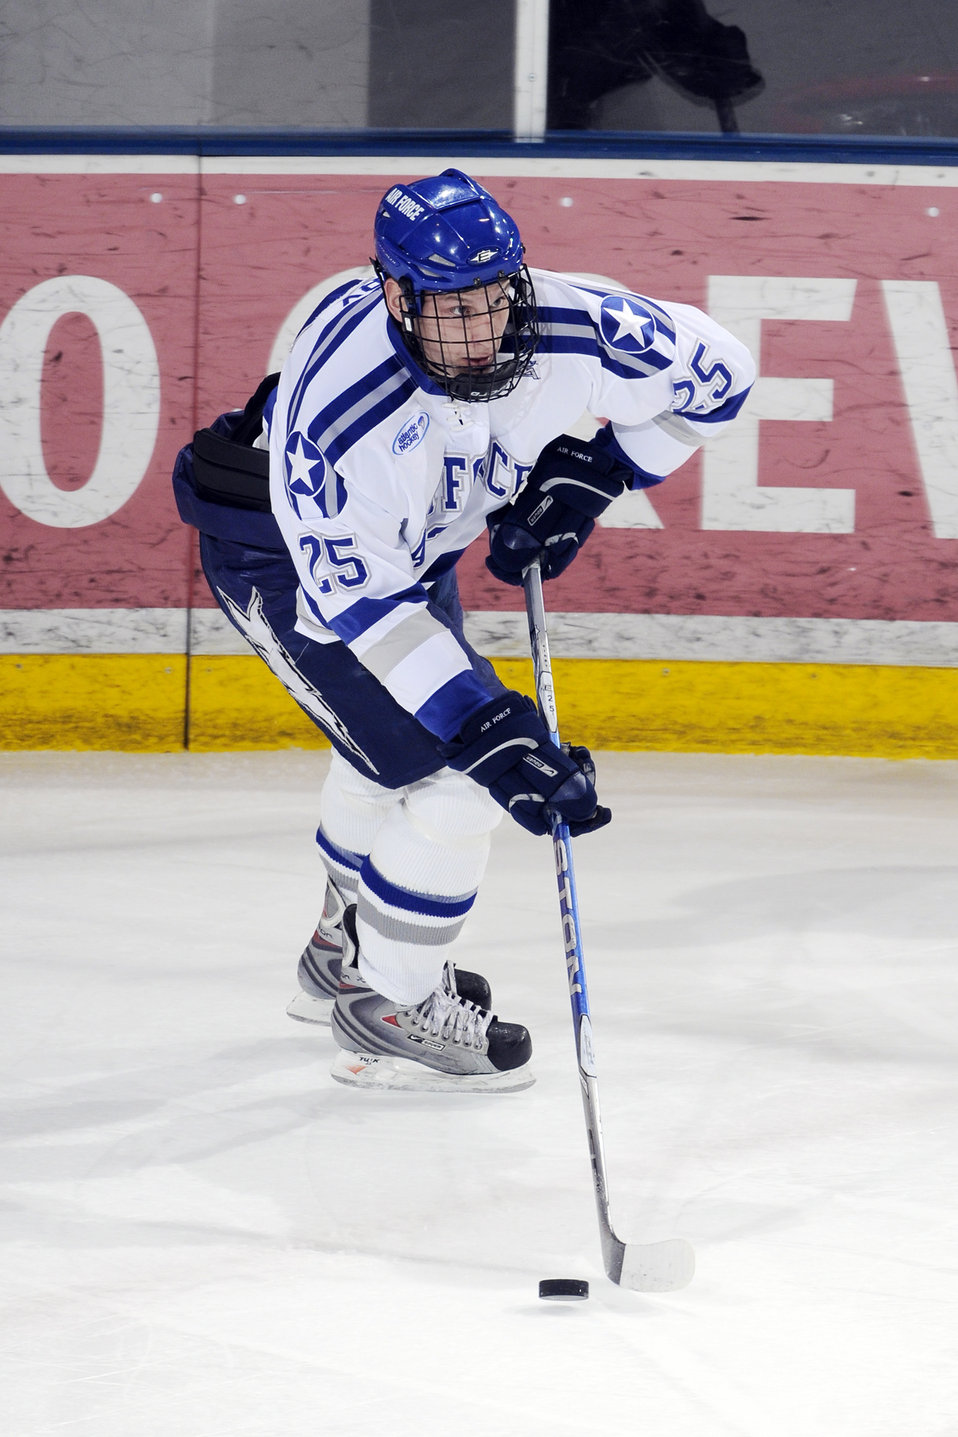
Air Force Academy

U.S. Air Force Academy, CO -- Sophomore Tim Kirby moves the puck as Air Force blanked Bentley 3-0 at the Cadet Ice Arena Nov 7. Air Force is 4-5-1 overall and 4-1-1 in the Atlantic Hockey Association. Air Force plays its next four games on the road, starting with a two-game series at Holy Cross, Friday and Saturday in Worcester, Mass.